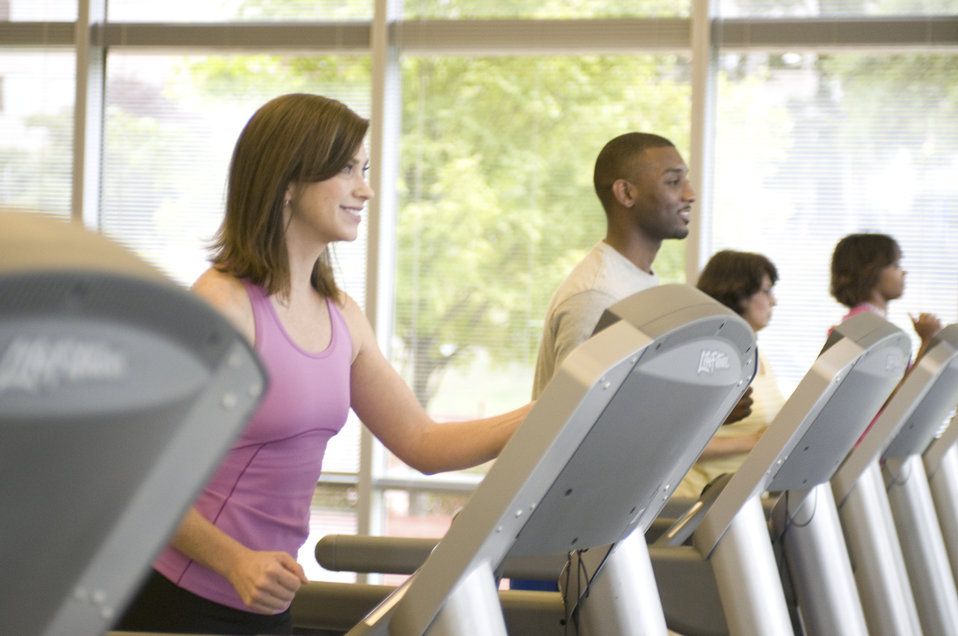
This image was captured on one of the Centers for Disease Control's (CDC) campuses, in the facility's fitness center, where a number of scheduled group classes are provided for employees' health and enjoyment. In this particular view, a number of CDC staffers was making use of the treadmills, taking part in some aerobic exercise.